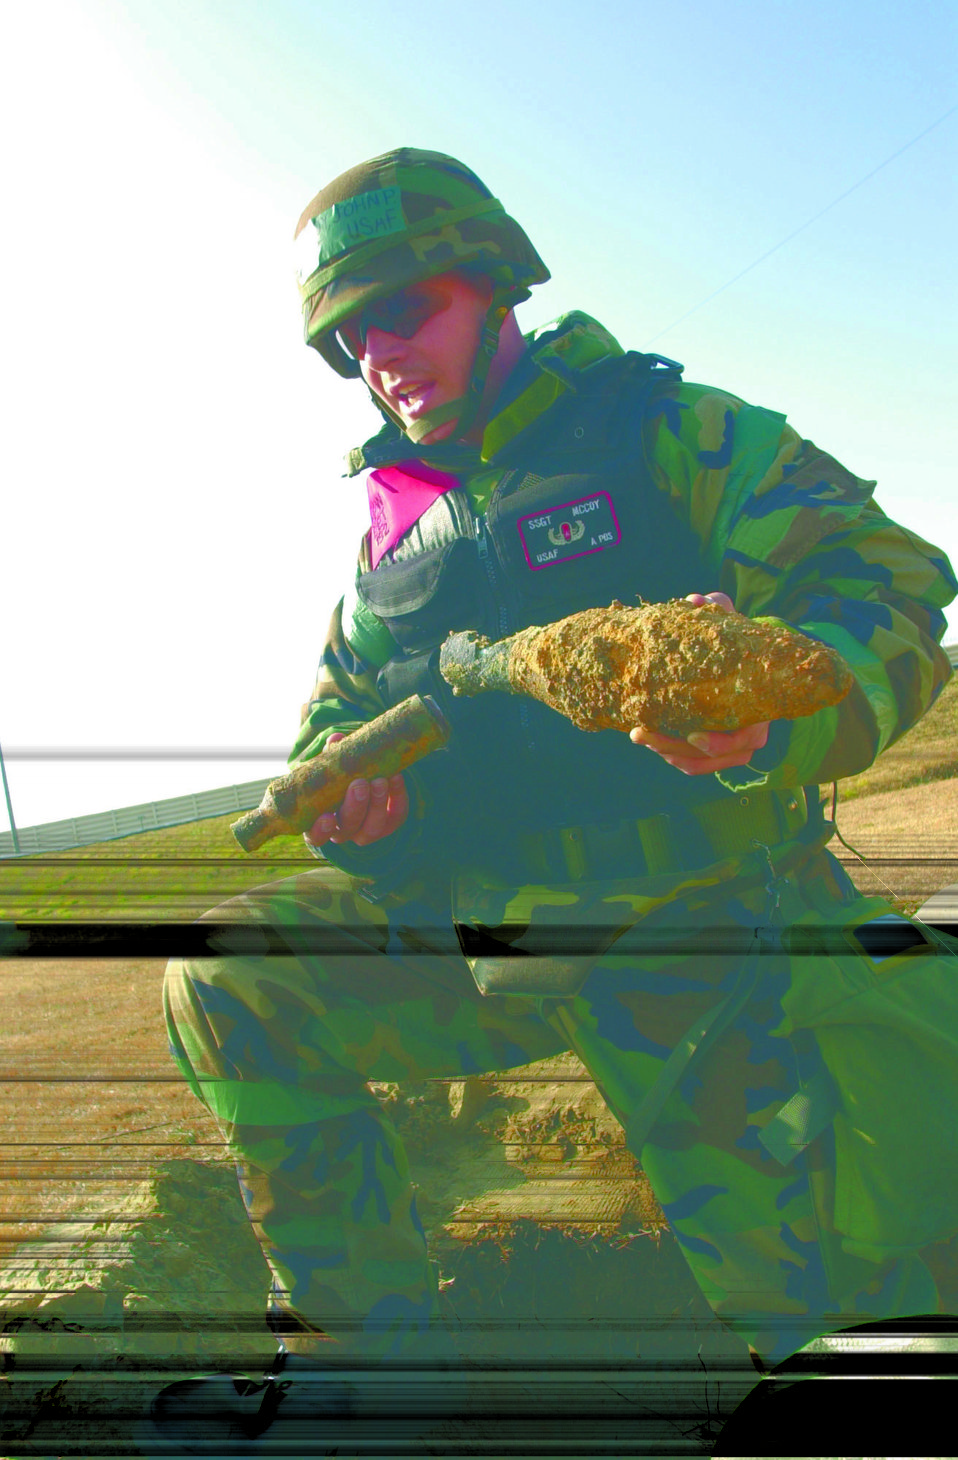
Kunsan Airmen destroy Korean War bazooka round

KUNSAN AIR BASE, South Korea -- Staff Sgt. John McCoy shows the remains of a Korean War-era bazooka round Dec. 16. The round was found by Korean airmen who turned it over to Airmen here because they had the proper technical orders for destroying the rocket. He is assigned to the 8th Civil Engineer Squadron explosive ordnance disposal flight.